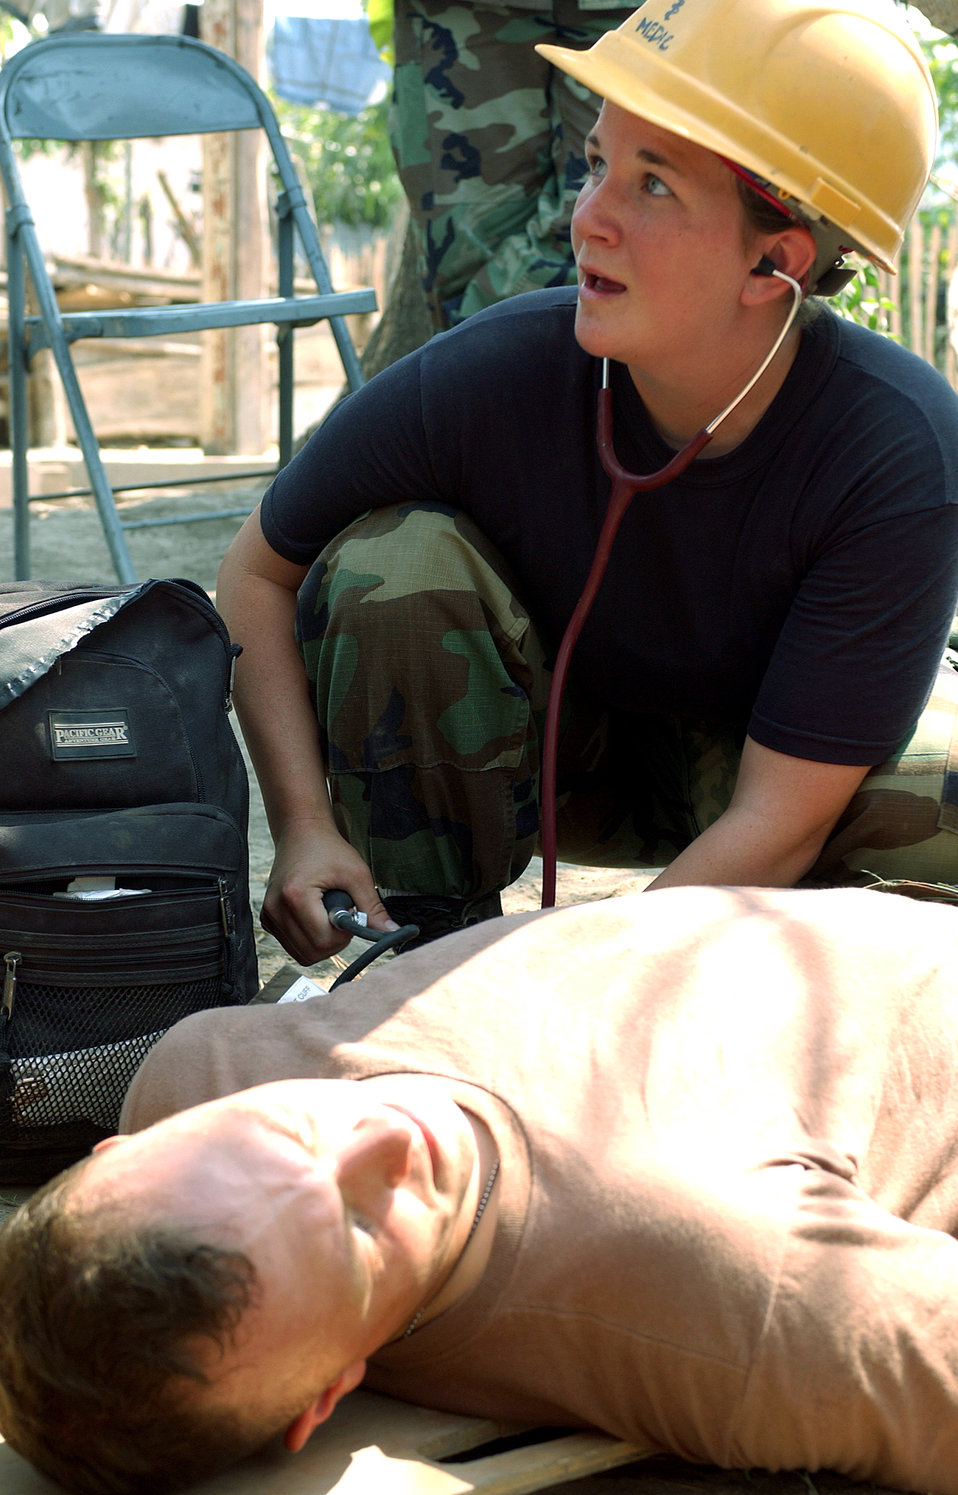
Practicing medicine in the field

LAS FLORES, El Salvador -- Senior Airman Jessica Henry takes Army Sgt. George Ruf's pulse while calling for help from engineers at a work site here during a medical evacuation exercise April 19. The exercise tested the response capabilities of medics, a joint Army and Air Force construction crew and an aircrew from the 24th Medical Company supporting Joint Task Force Para Los Ninos. The exercise is a joint humanitarian readiness exercise providing schools and clinics around the San Vicente area hit hardest by multiple earthquakes in 2001. Airman Henry is a medic with the 27th Medical Operations Squadron at Cannon Air Force Base, N.M.